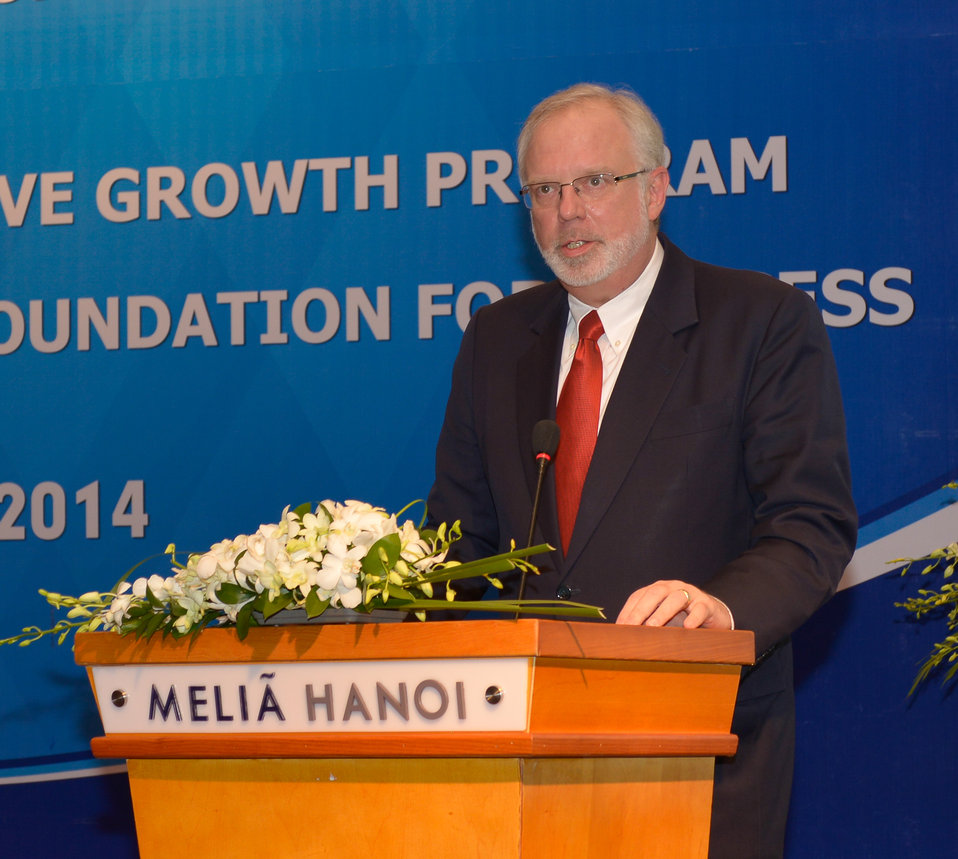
U. S. Ambassador David Shear speaks at the strategic kick-off workshop.

Hanoi, April 8, 2014.